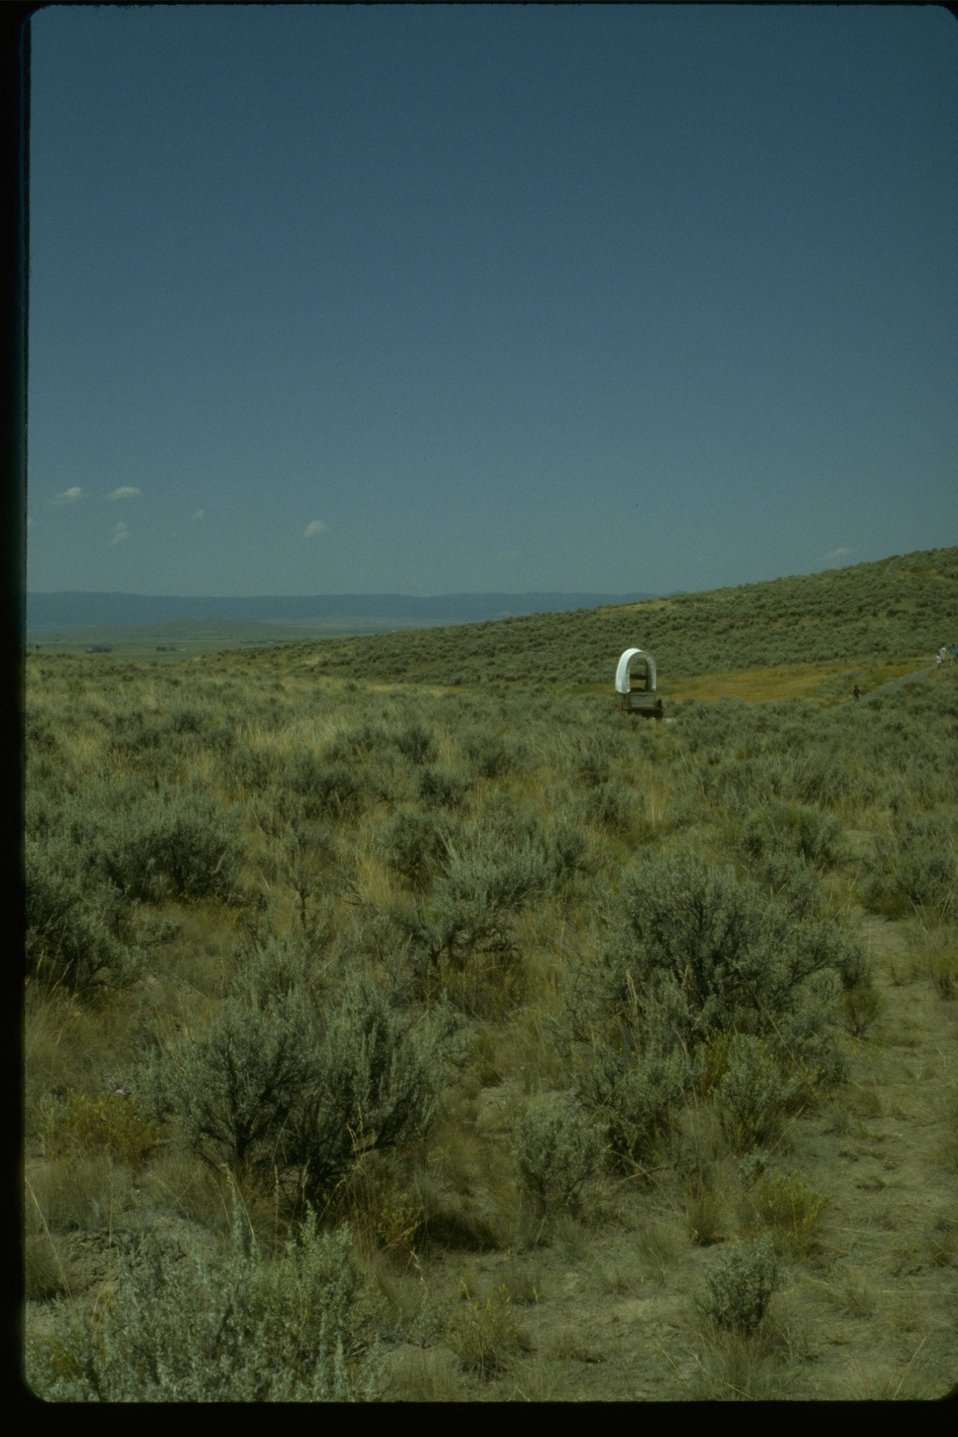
Flagstaff hill ruts near the NHOTIC.